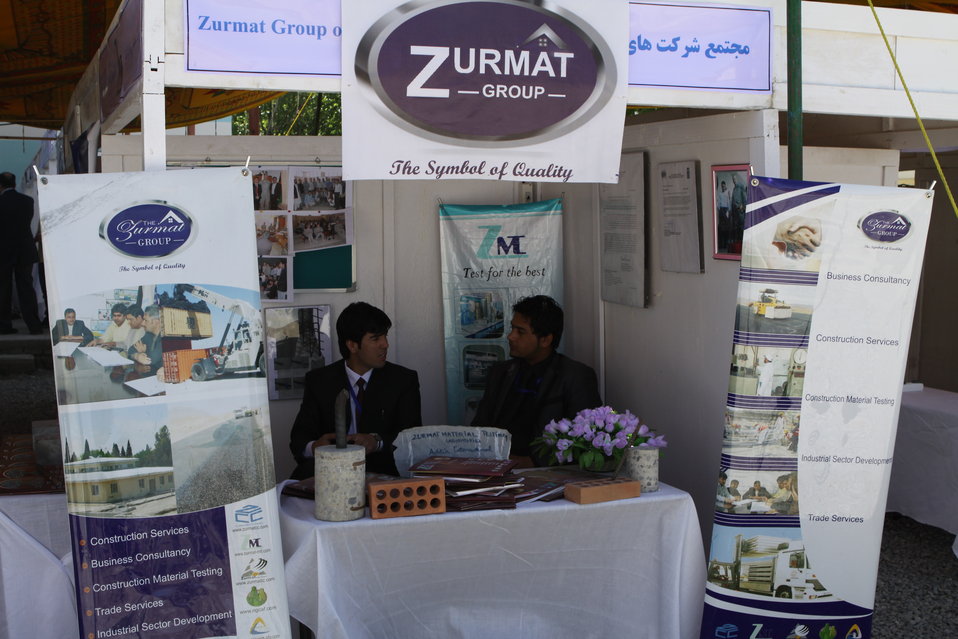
100522 ATVI Graduation 020